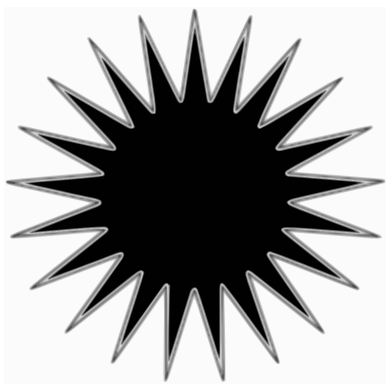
Yazdan symbol black